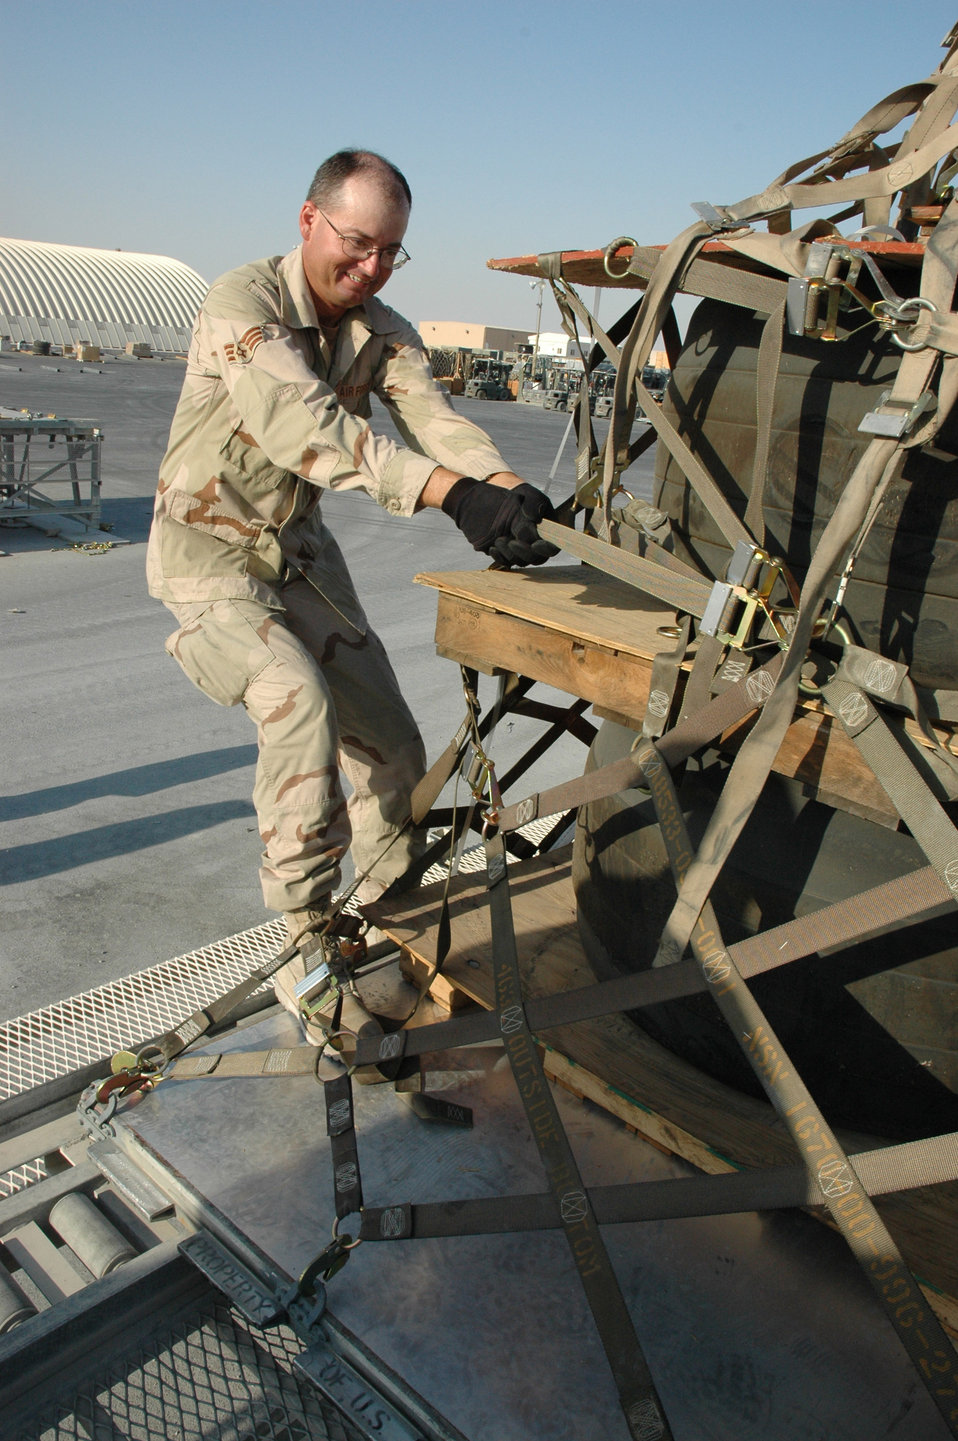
8th Expeditionary Air Mobility Squadron thinks lean

Senior Airman Jayson Steelman puts his back into tightening the side nets on a multi-pallet